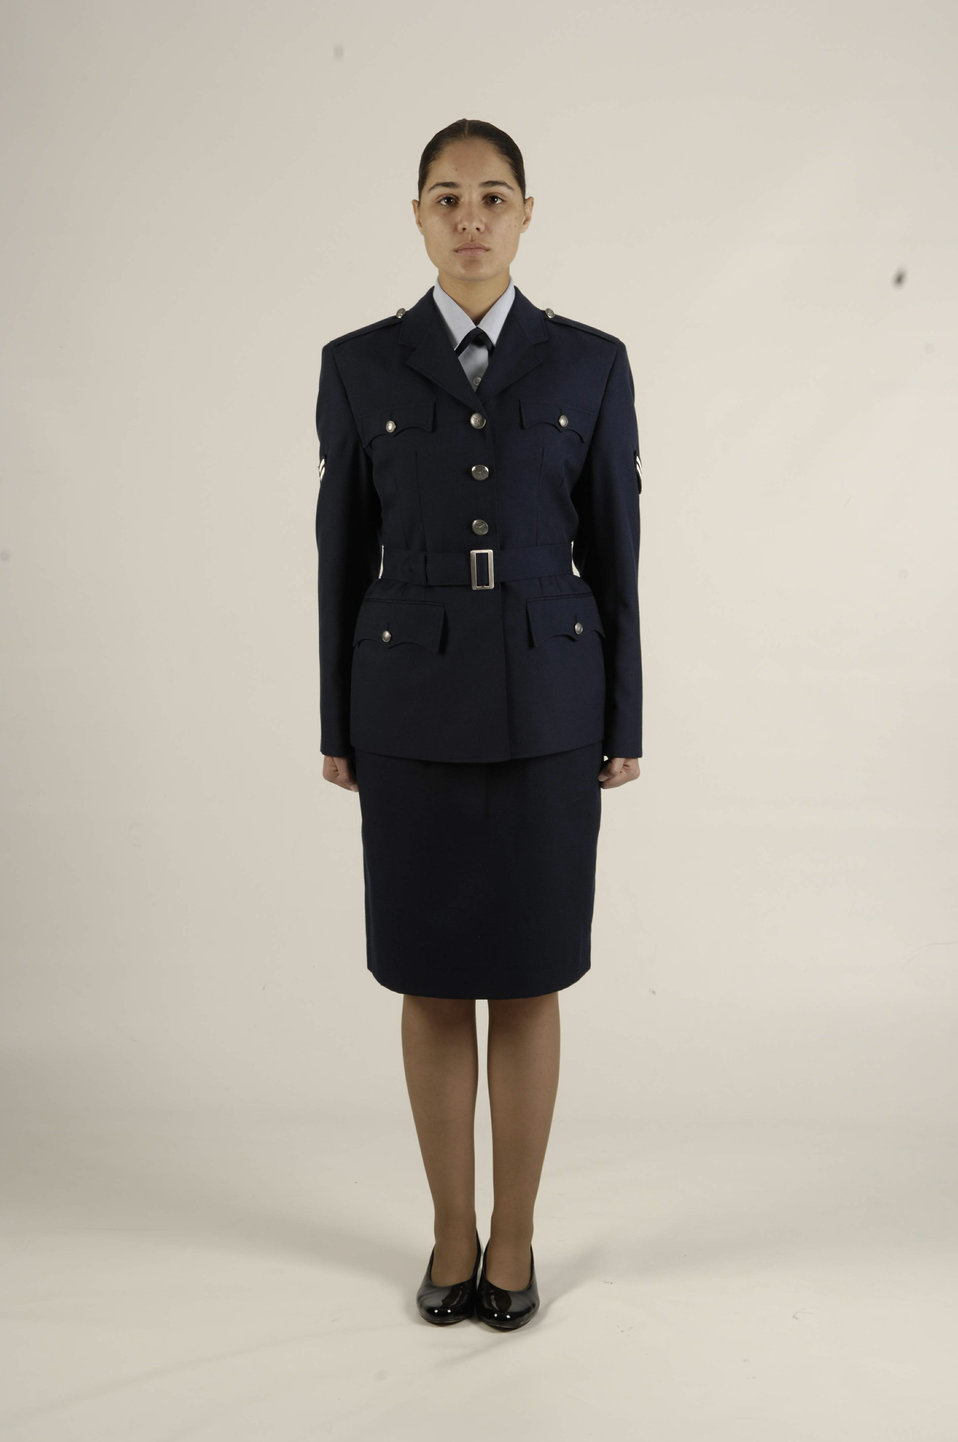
Heritage Coat production uncertain despite favorable reviews

Officer and enlisted male and female participants wear-tested three variant issue designs of the proposed Heritage Coat. The differences between the coats were a fabric belt and slide buckle, the honor guard style belt and buckle, and the four-button, no belt style.